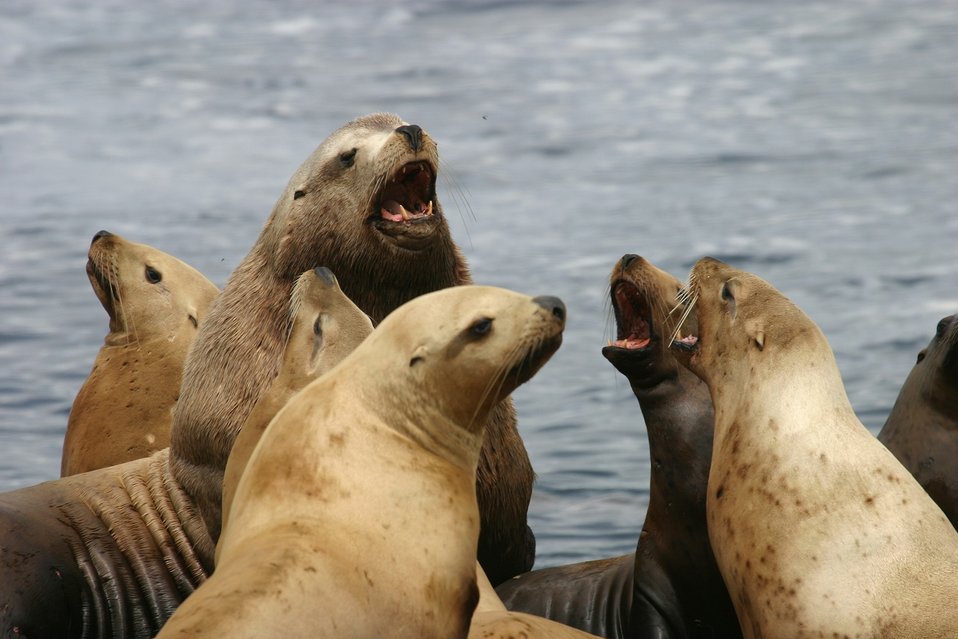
Steller sea lions, Oregon Islands NWR

Steller sea lions bark a chorus on the Rogue Reef unit of Oregon Islands National Wildlife Refuge.